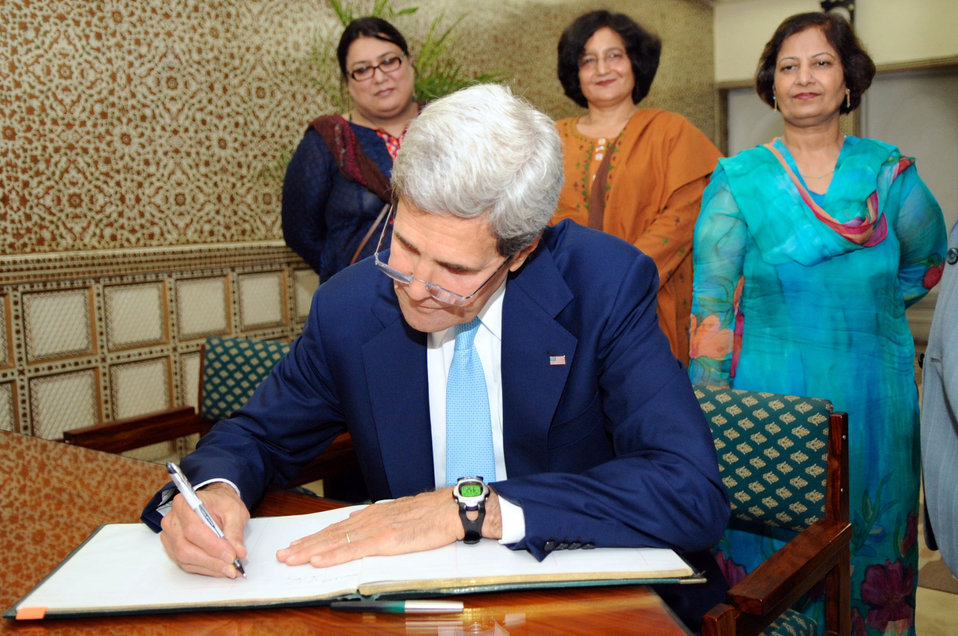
Secretary Kerry Signs the Guestbook

U.S. Secretary of State John Kerry signs the guestbook at the Fatimah Jinnah Women's University in Rawalpindi, Pakistan, during a visit on August 1, 2013.